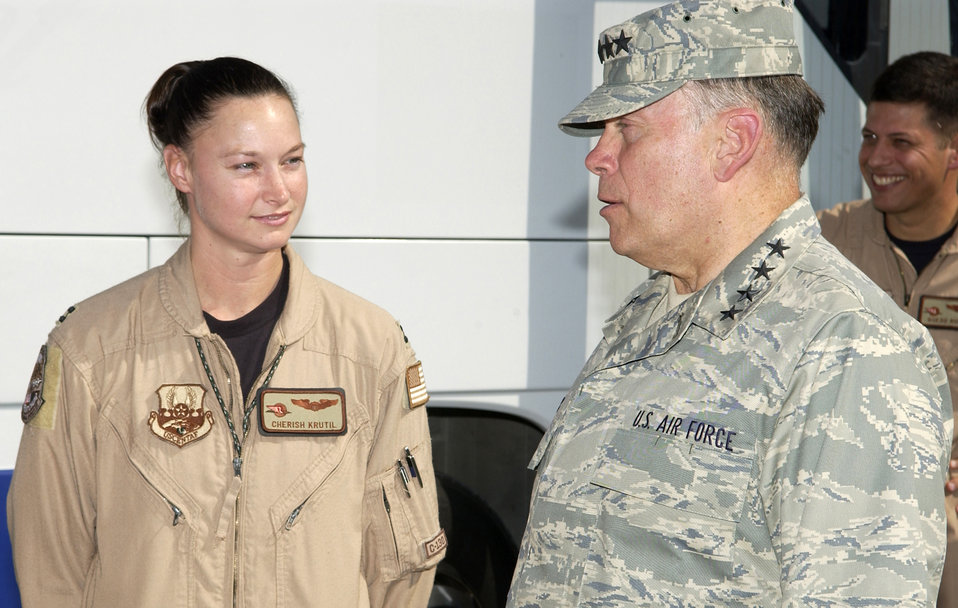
Air Force leaders premiere new uniform

SOUTHWEST ASIA -- Air Force Chief of Staff Gen. John P. Jumper speaks with Capt. Cherish Krutil from the 745th Expeditionary Airlift Squadron at a forward-deployed location Nov. 4. The general, Secretary of the Air Force Dr. James G. Roche and Chief Master Sgt. of the Air Force Gerald R. Murray are traveling the area visiting deployed Airmen.